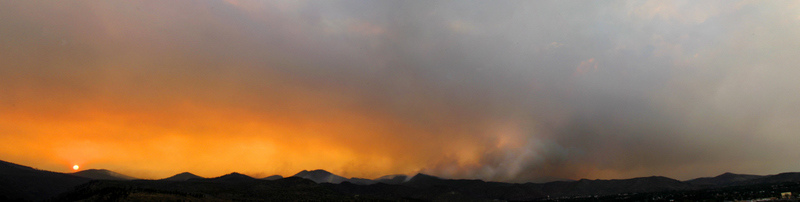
Panorama of Jemez Mountains taken from atop the National Security Building, Los Alamos National Laboratory, July 6, 2011.

The Las Conchas Fire started on June 26, 2011, it was caused by a fallen tree that caught fire after it came in contact with power lines nearby. The fire had burned over 121,000 acres, including 63 residences. At no time were hazardous materials in danger at Los Alamos National Laboratory. The lab was closed for a week and reopened on July 6th.